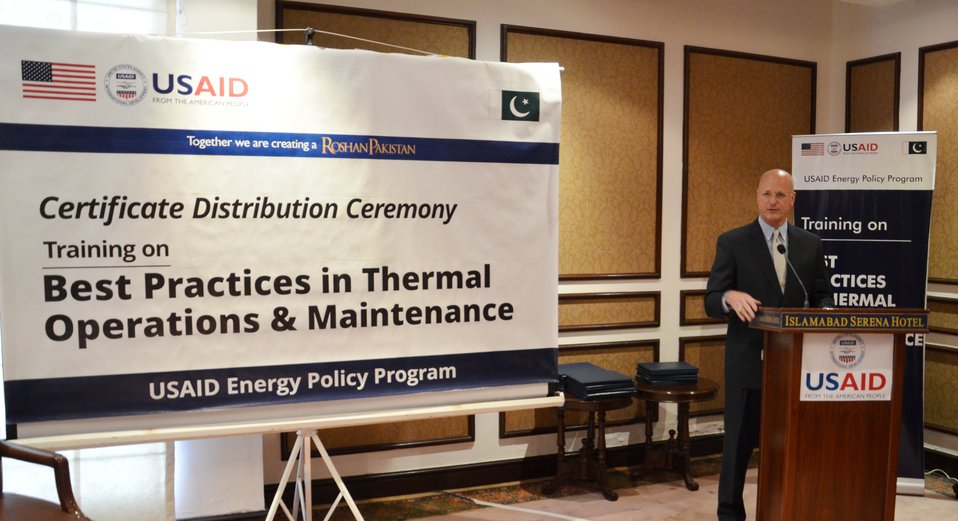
Tim Moore, Acting Director USAID Energy Office addressing the ceremony